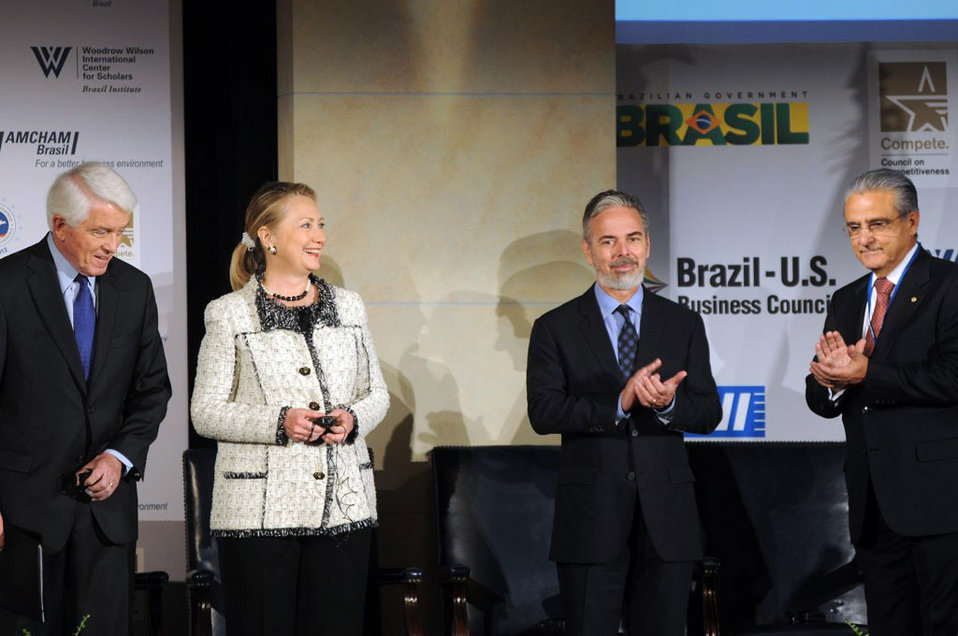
U.S. Chamber of Commerce President and CEO Donohue, Secretary Clinton, and Brazilian Foreign Minister Patriota Applaud the U.S.-Brazil Partnership

U.S. Chamber of Commerce President and CEO Thomas J. Donohue,left; U.S. Secretary of State Hillary Rodham Clinton, second from left; and Brazilian Foreign Minister Antonio de Aguiar Patriota; second from right; applaud the U.S.-Brazil Partnership at the U.S. Chamber of Commerce in Washington, D.C., on April 9, 2012.